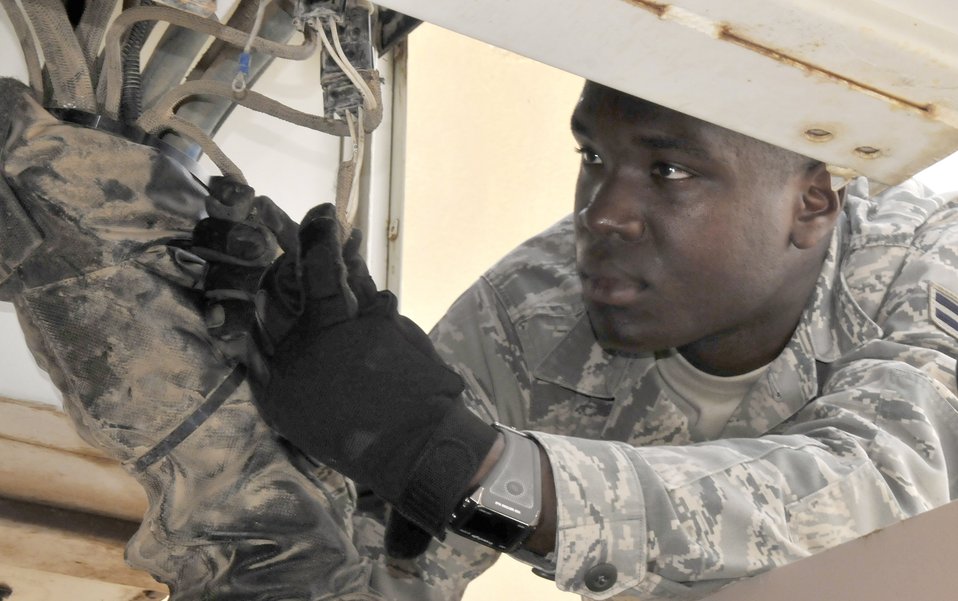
C-17 maintenance crew

Airman 1st Class David O'Loughlin inspects a wire harness of an aircraft tow vehicle July 12, 2010, at Joint Base Balad, Iraq. The tow vehicle weighs approximately 100,000 pounds, making it ideal for pushing and pulling heavy aircraft like the C-17 Globemaster III. Airman O'Loughlin, a native of Oakland, Calif., is deployed from Joint Base McGuire-Dix-Lakehurst, N.J.